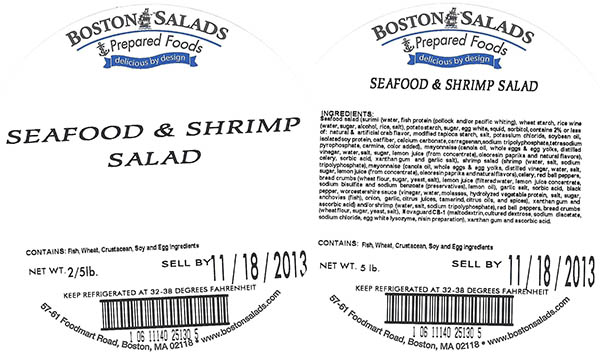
RECALLED – Prepared salads

October 24, 2013 – Product Recall – Boston Salads and Prepared Foods Recalling Ready-To-Eat Products Because of Possible Health Risk.